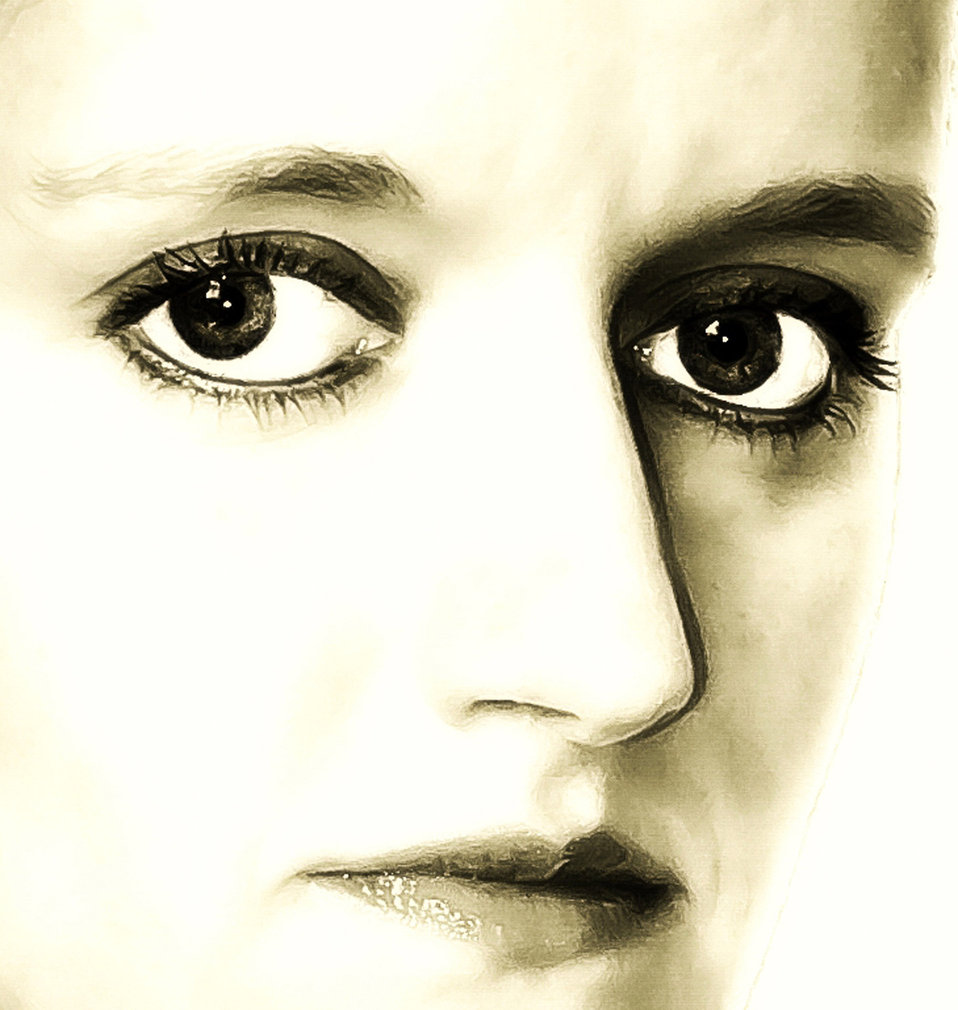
Woman face - macro.